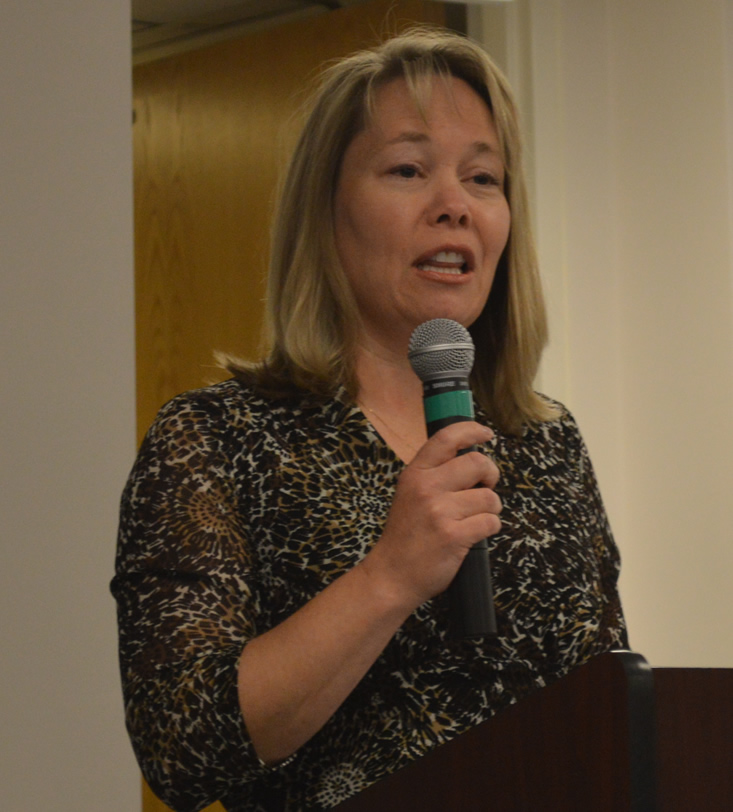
Regional Director Steve Guertin Moves on to Senior Leadership Position

On November 1, 2012, USFWS Mountain-Prairie Regional Director, Steve Guertin, served his last day as Regional Director before moving on to a senior leadership position at Headquarters.

Regional leadership and partners shared their memories of Steve's outstanding leadership and his unique ability to leverage his outstanding technical skills while maintaining a very personable persona - all amidst a variety of challenging issues.